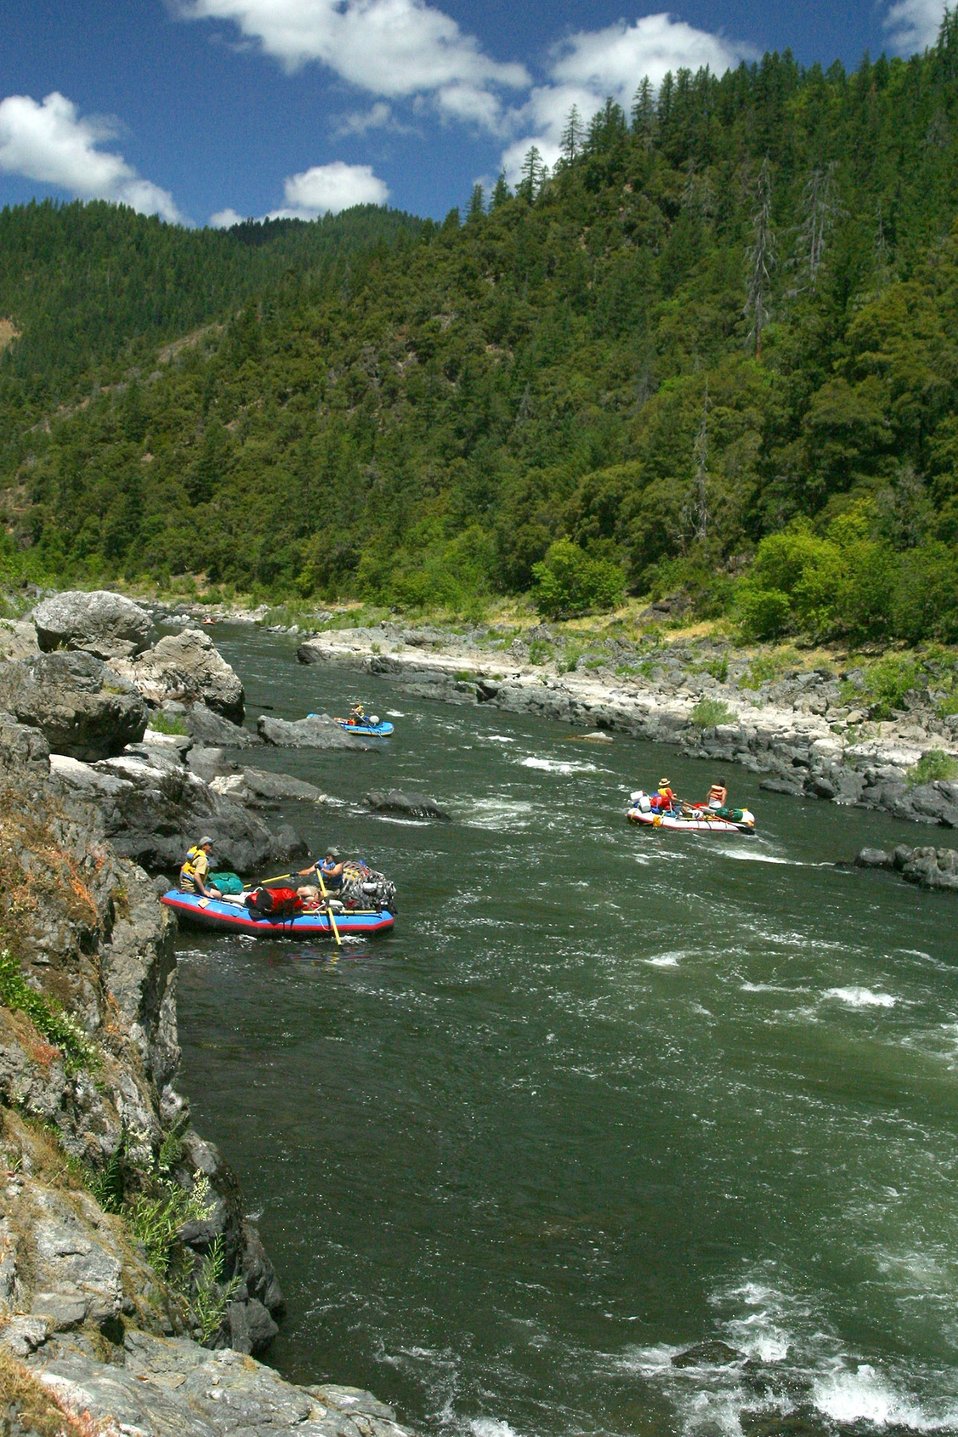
Looking down river below Rainie Falls